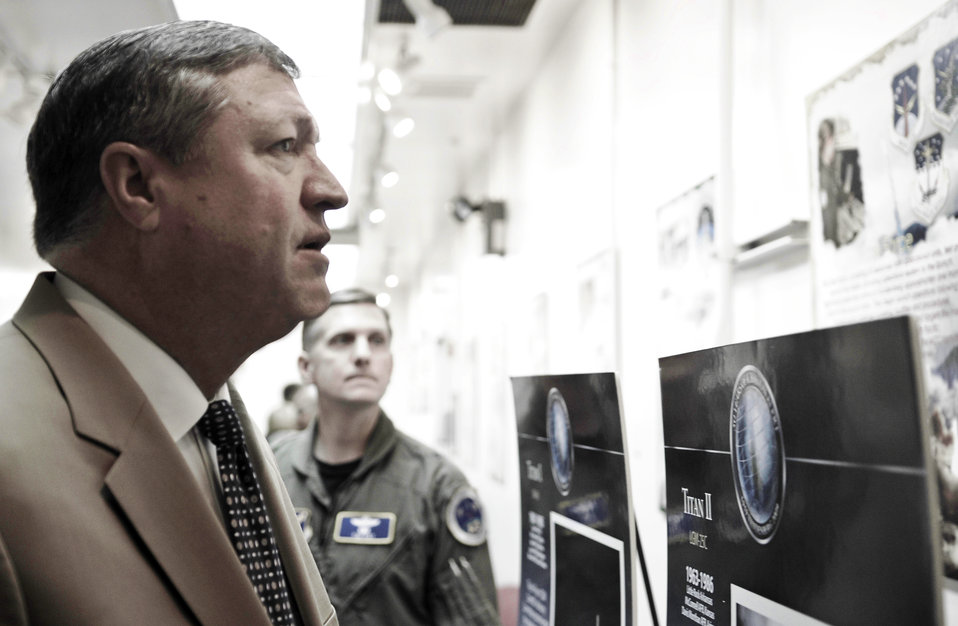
SecAF discusses Minuteman III, space at Vandenberg

Secretary of the Air Force Michael Donley looks at a display featuring some of previous launches at Vandenberg Air Force Base, Calif., during a tour of base facilities June 15, 2010. During his visit, Secretary Donley met with base leadership, toured facilities and observed a Minuteman III launch, the first under Air Force Global Strike Command.